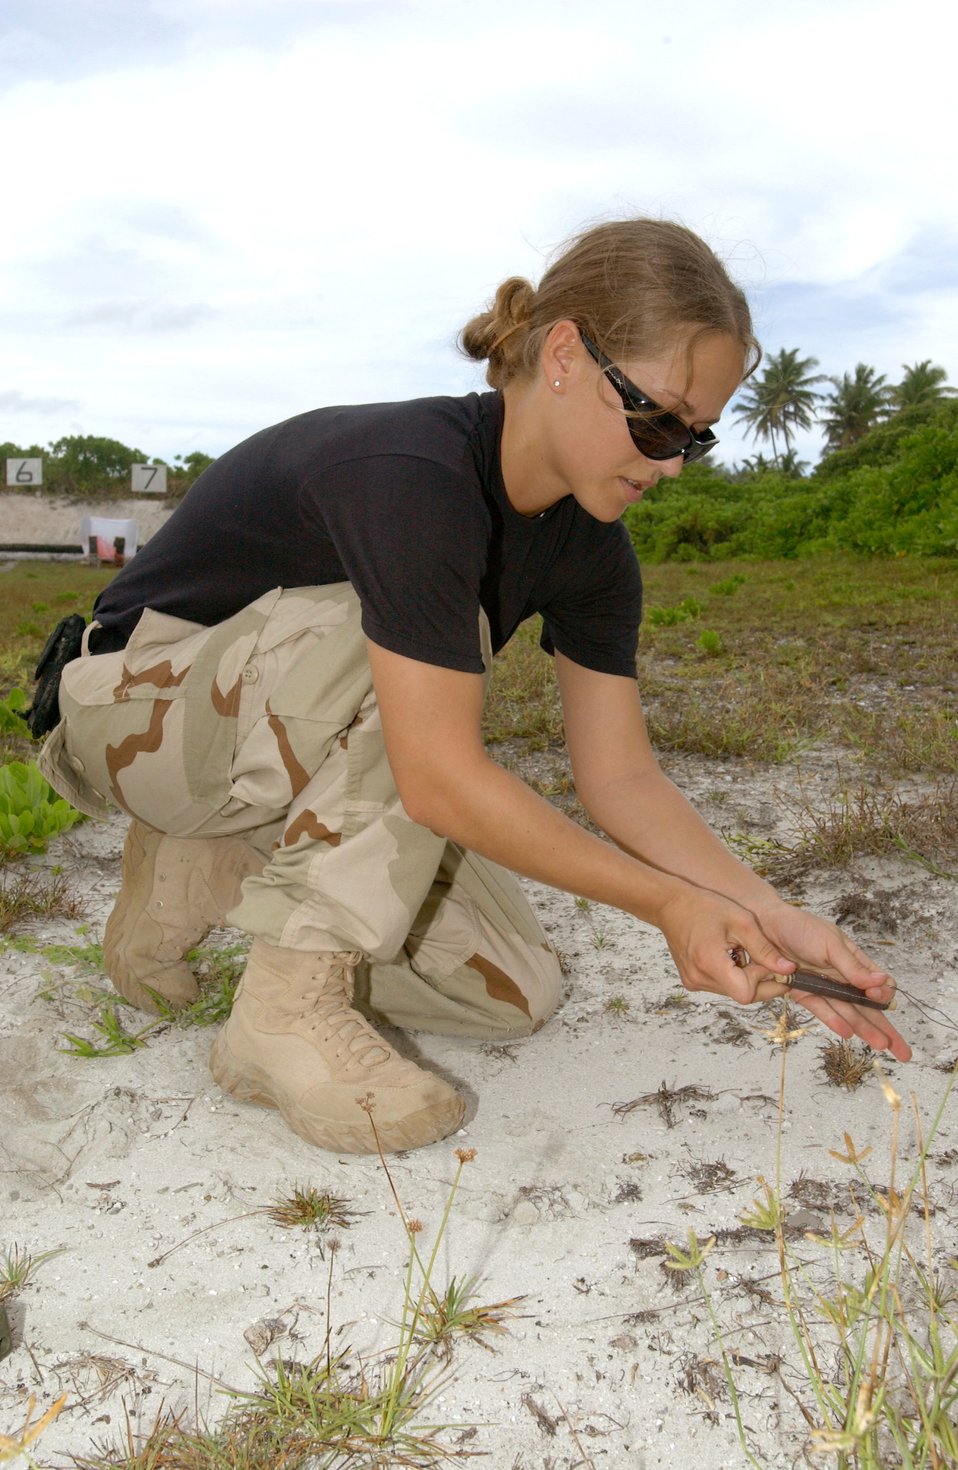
Initial success or total failure; no in between for EOD

OPERATION ENDURING FREEDOM -- Senior Airman Bambi Brown sets caps and a detonation cord in preparation for a firepower demonstration at a forward-deployed location. She is an explosive ordnance disposal technician with the 40th Expeditionary Civil Engineer Squadron and is deployed from Little Rock Air Force Base, Ark.